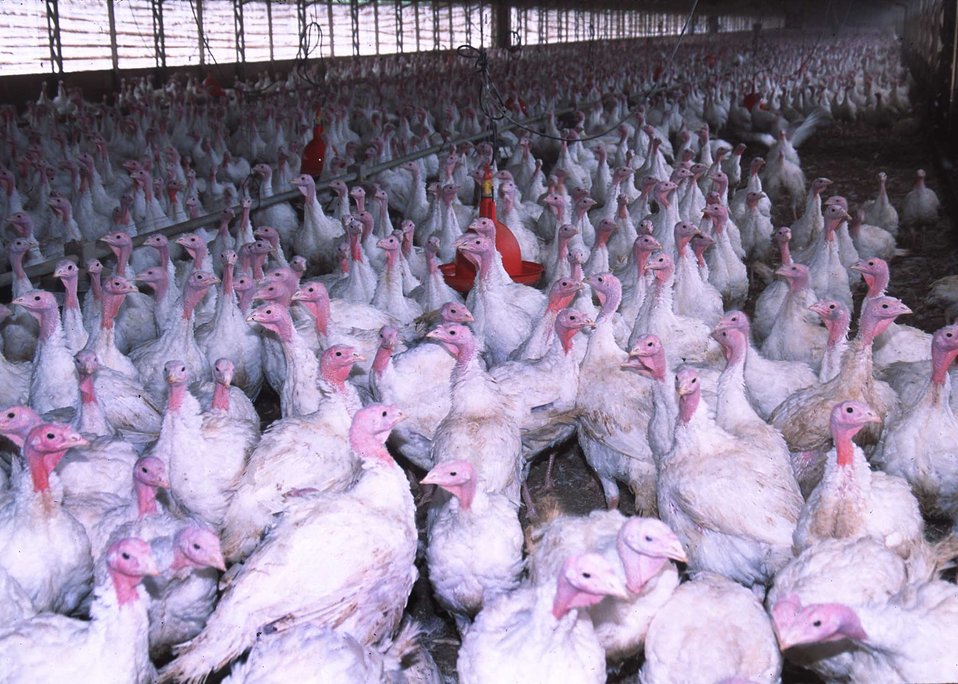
A total of 10,000 turkeys are raised in each building in Benton, Arkansas. Manure and wood chips used for bedding are then composted and used for fertilizer on adjacent pastures.